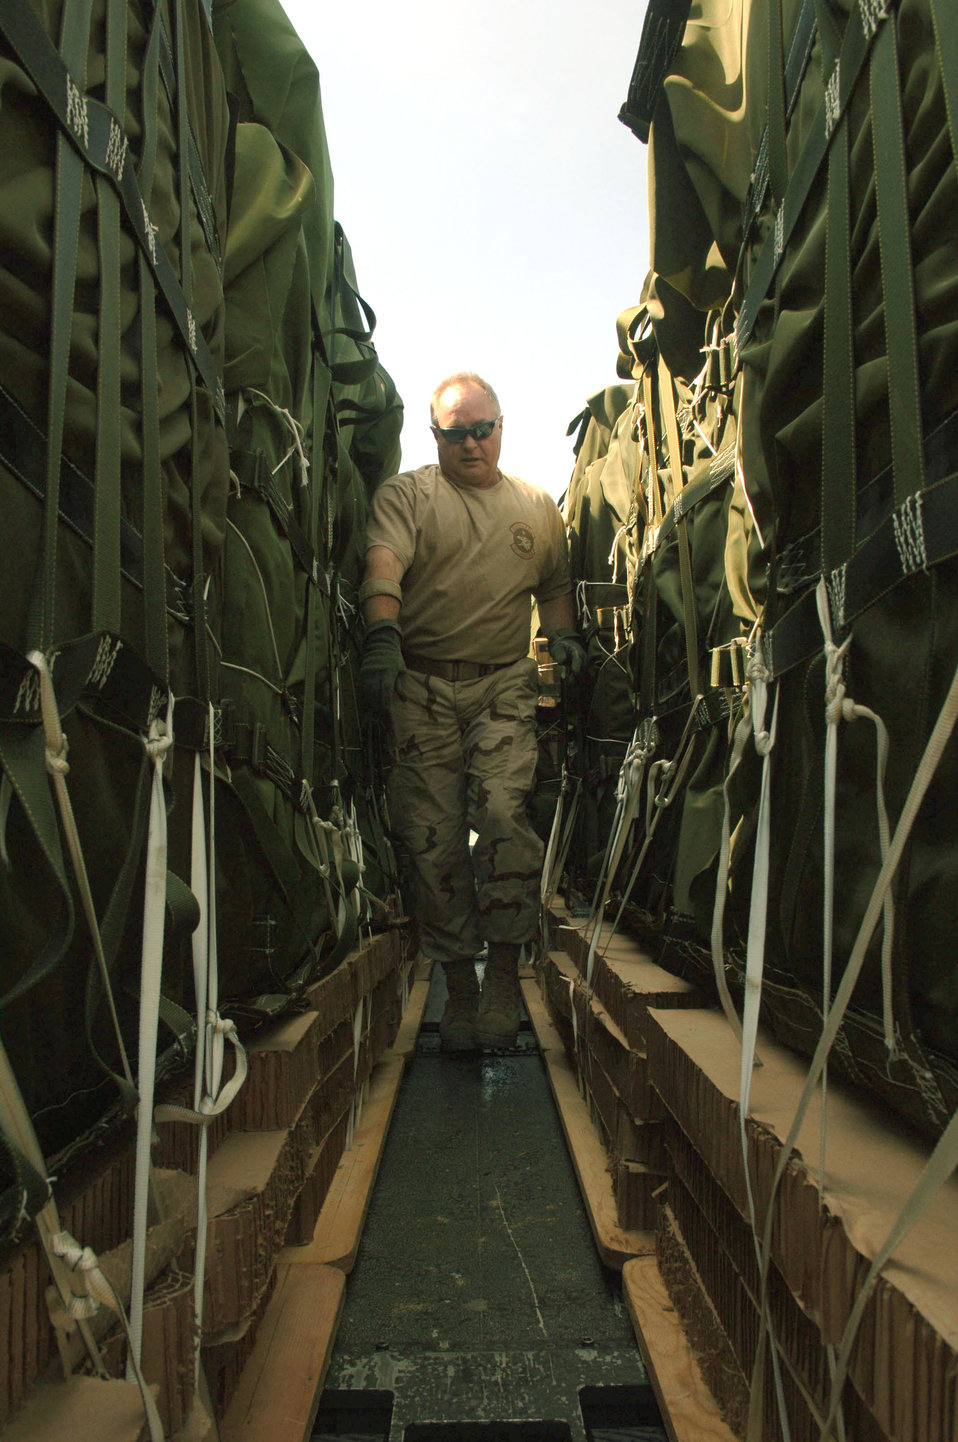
C-130s support coalition operations

Chief Master Sgt. Gary Lanham inspects pallets before they are loaded onto a C-130 Hercules from the 774th Expeditionary Airlift Squadron on Saturday, April 15, 2006. Chief Lanham is the squadron's loadmaster superintendent. He is deployed to Bagram Air Base, Afghanistan, from Kulis Air National Guard Base, Alaska.